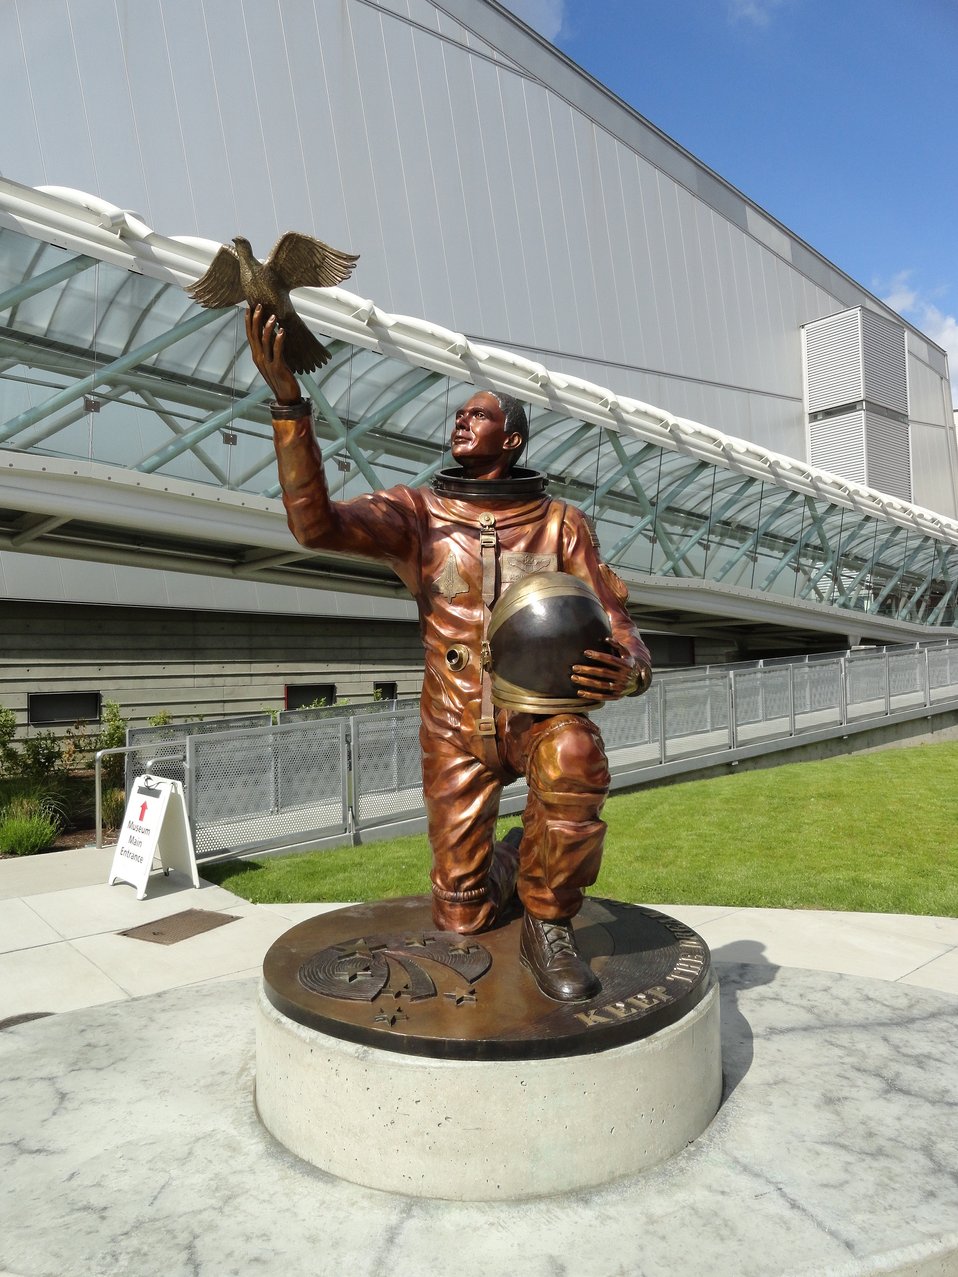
Michael P. Anderson

A memorial to Astronaut Michael P. Anderson who died on the space shuttle Columbia